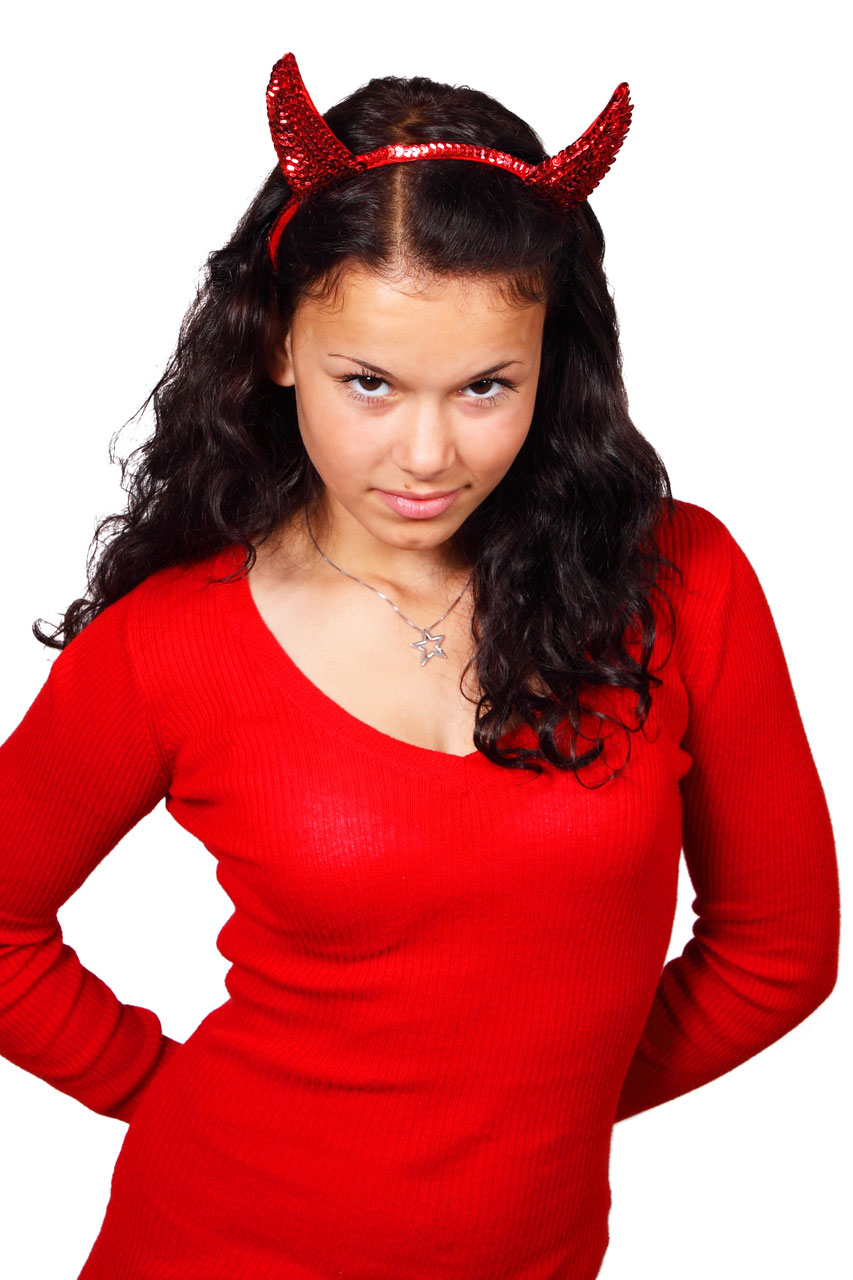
Hot red devil

Halloween costume of devil.